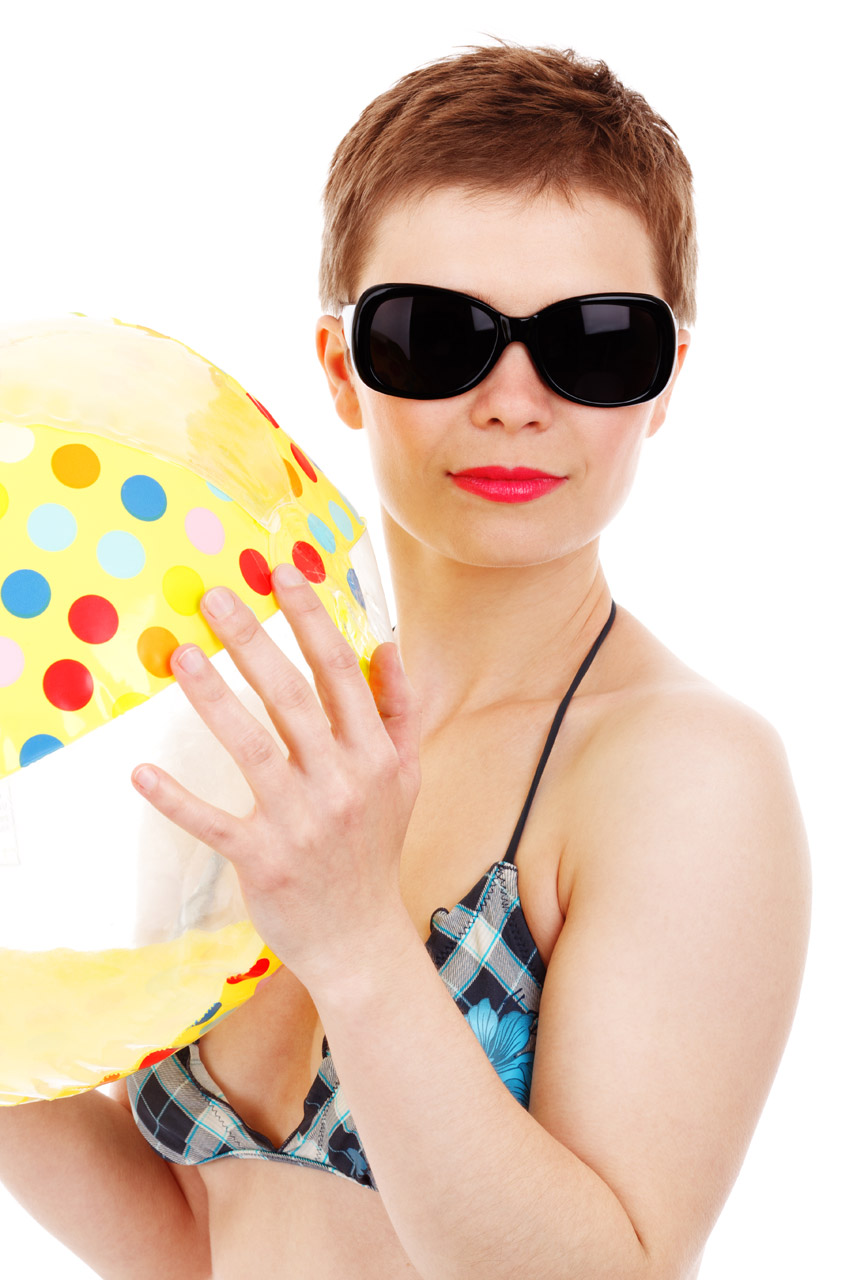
Woman and beach ball

Young woman in bikini with a beach ball and sunglasses isolated on white background.